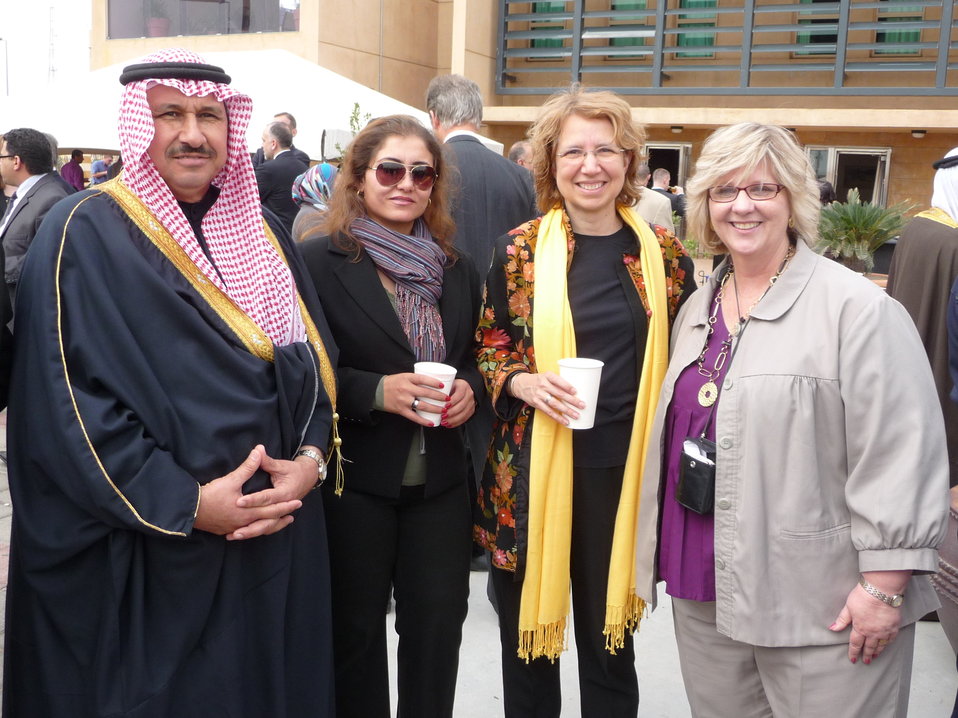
Karen Malzahn and Marialice Eperiam Celebrate National Day in Iraq

Karen Malzahn (Baghdad ePRT North) and Marialice Eperiam (U.S. Embassy Baghdad) interact with Iraqis on National Day in Baghdad, February 2010.